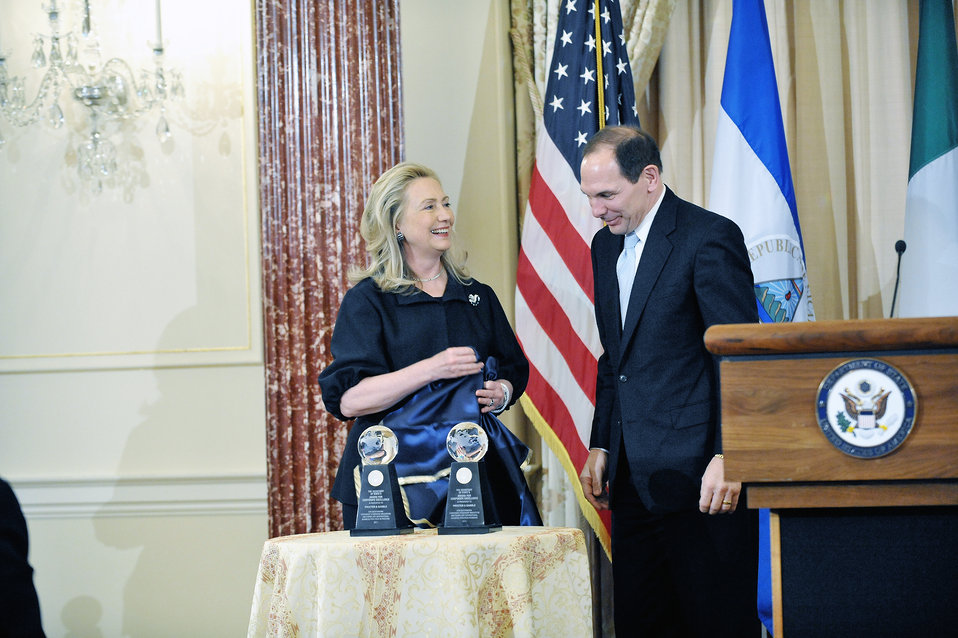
Secretary Clinton Presents the Awards for Corporate Excellence

U.S. Secretary of State Hillary Rodham Clinton presents the Awards for Corporate Excellence (ACE) to Sahlman Seafoods, Incorporated, in Nicaragua; Procter and Gamble in Nigeria; and Procter and Gamble in Pakistan, at the U.S. Department of State in Washington, D.C., on January 18, 2012.